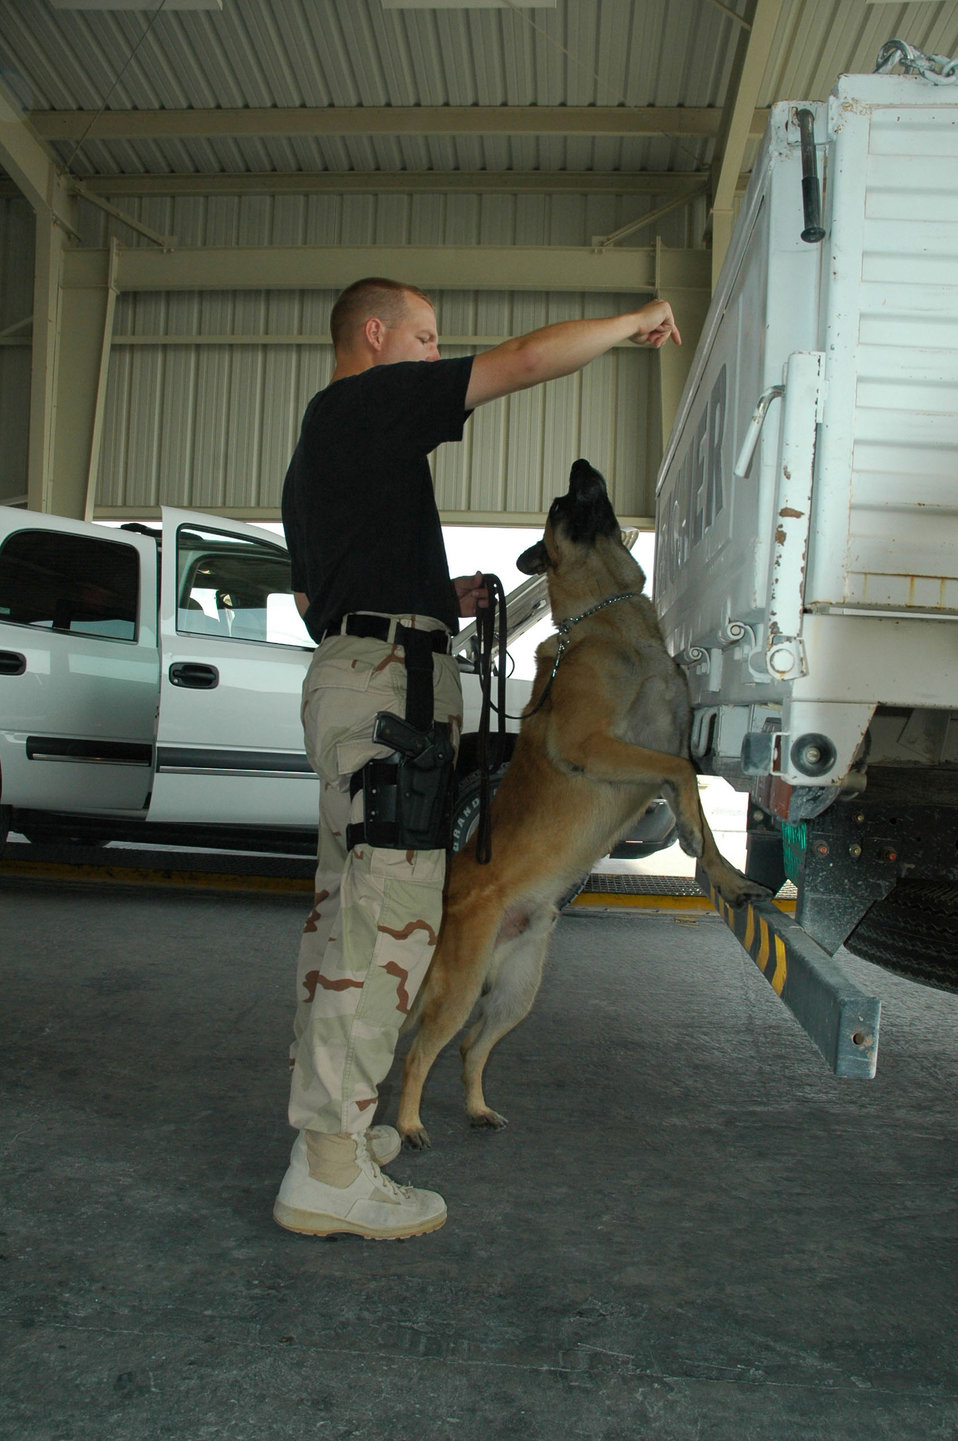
Security

SOUTHWEST ASIA (AFPN) -- A 379th Expeditionary Security Forces Squadron military working dog team, Staff Sgt. John Helms and Torro, ensures base security at a main gate's search pit.